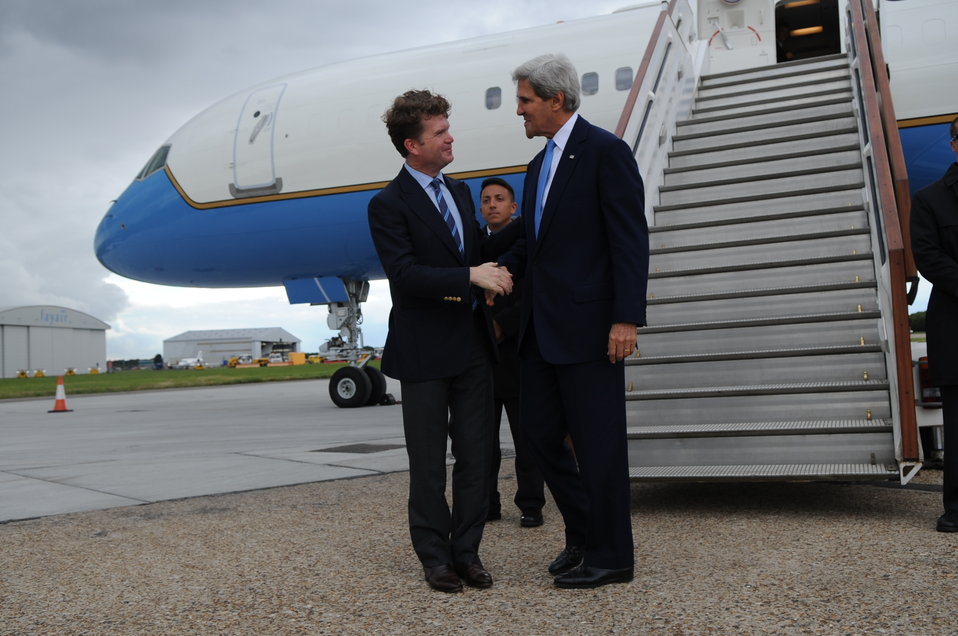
Ambassador Barzun Greets Secretary Kerry Upon His Arrival in London

U.S. Ambassador to the United Kingdom Matthew Barzun welcomes U.S. Secretary of State John Kerry as he arrives at in London, United Kingdom for meetings on September 8, 2013.